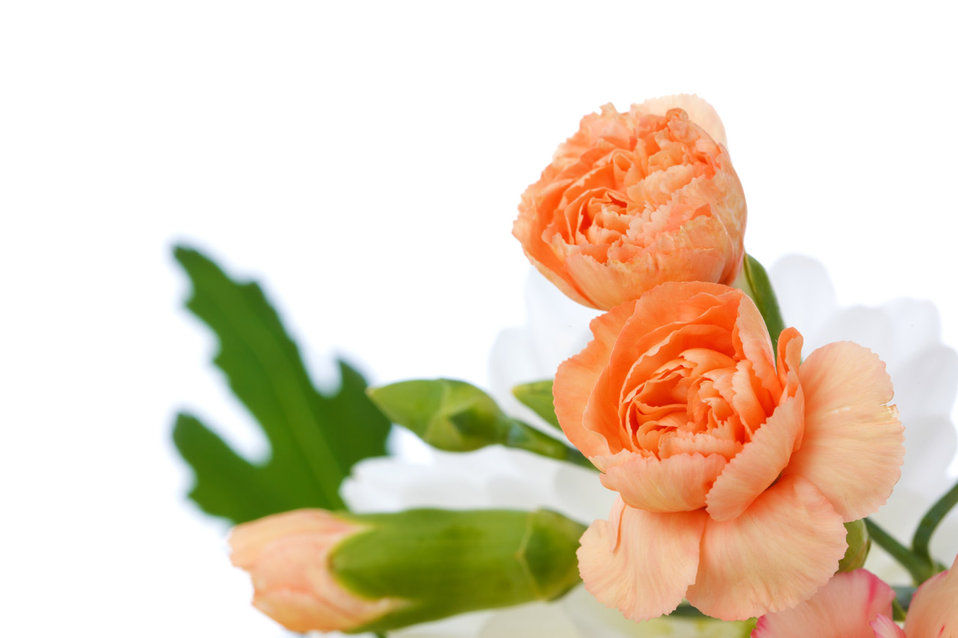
Orange carnations isolated on white background.